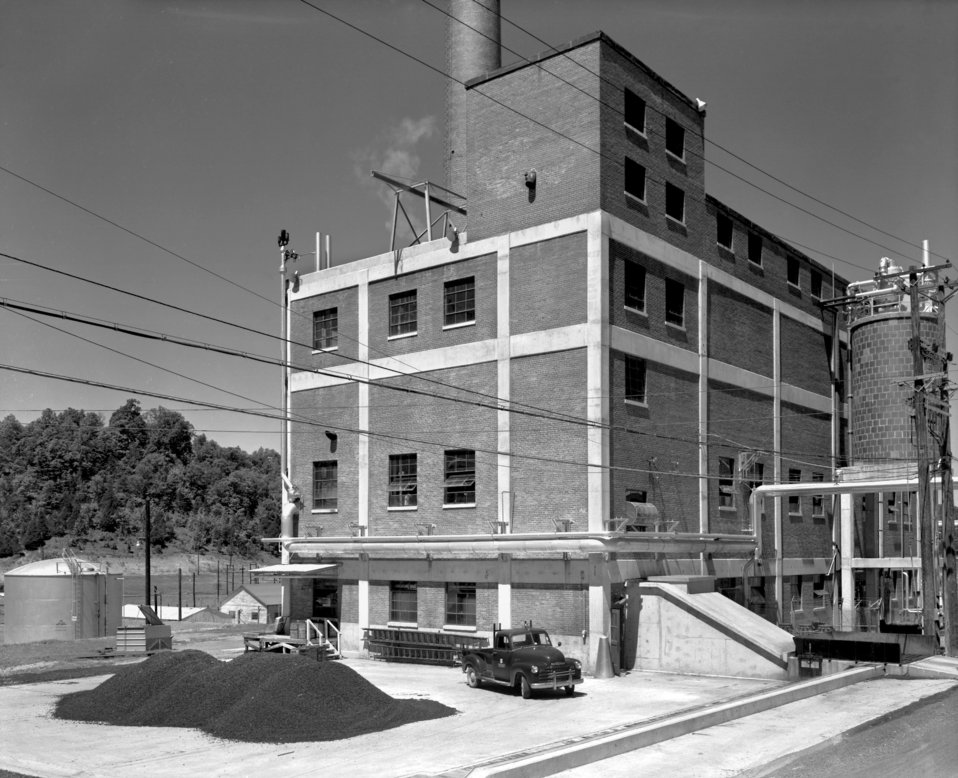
Steam Plant ORNL X-10 Oak Ridge

DOE photo by Jack P. Tarver

Bld. 2519 ORNL X-10 Steam Plant looking SE Toward Oak Ridge Tennessee 7/9/1952